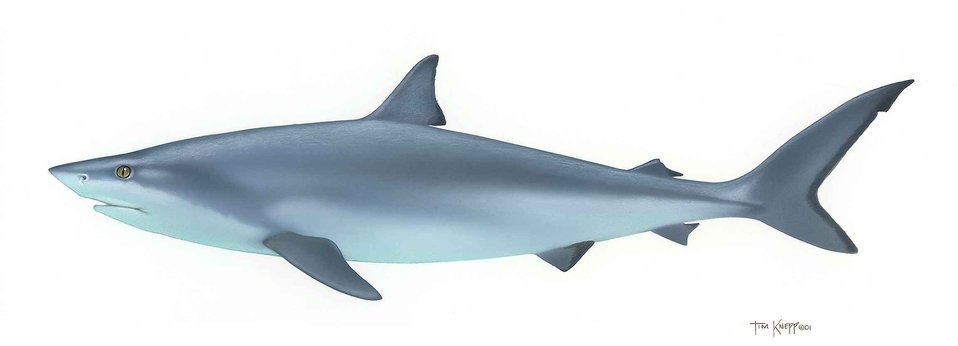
English:
Image title: Carcharhinus leucas Image from Public domain images website, http://www.public-domain-image.com/full-image/fauna-animals-public-domain-images-pictures/fishes-public-domain-images-pictures/shark-fish-chondrichthyes.jpg.html